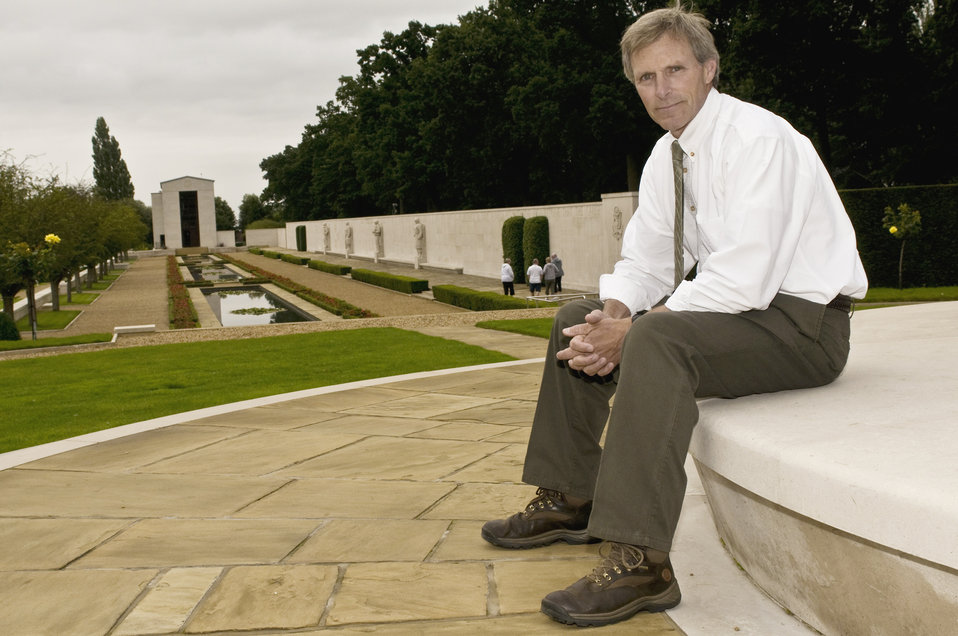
'Resolve of our Nation' found at American Cemetery

David Bedford sits in front of the Cambridge American Cemetery and Memorial's great mall Aug. 10 in Cambridge, England. Mr. Bedford is the superintendent of the Cambridge American Cemetery and Memorial and an American veteran. He's been the superintendent of the cemetery for 2.5 years and has worked for the American Battle Monuments Commission for 10 years.